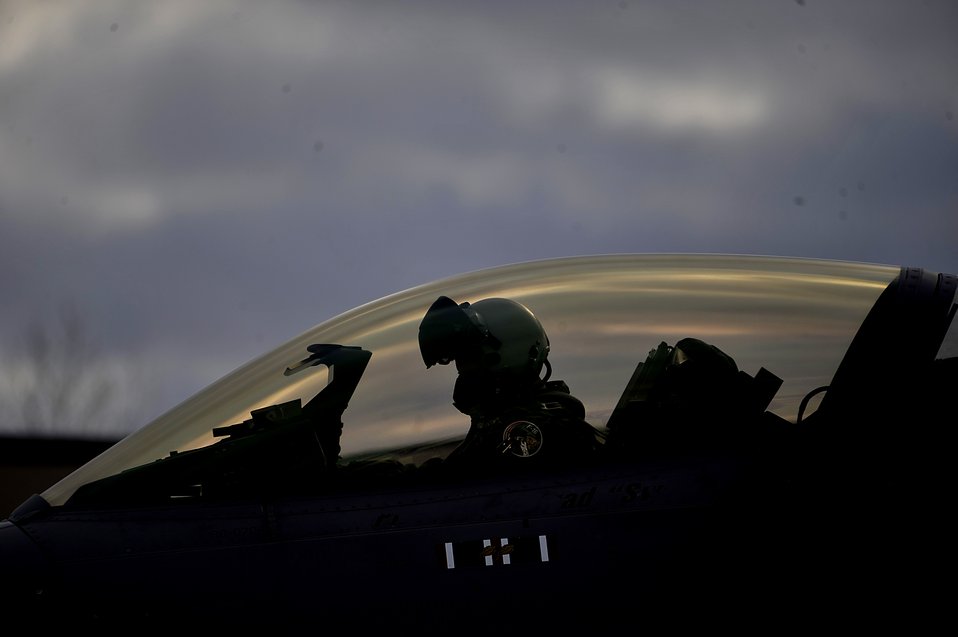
Fuels testing at Ohio Air National Guard Base

An F-16 Fighting Falcon from the 180th Fighter Wing taxi's down the runway for take off Feb. 12, 2012, at the Ohio Air National Guard Base. The jet is one of two designated to fly using a 50/50 blend of conventional and alternative fuel during a field service evaluation.